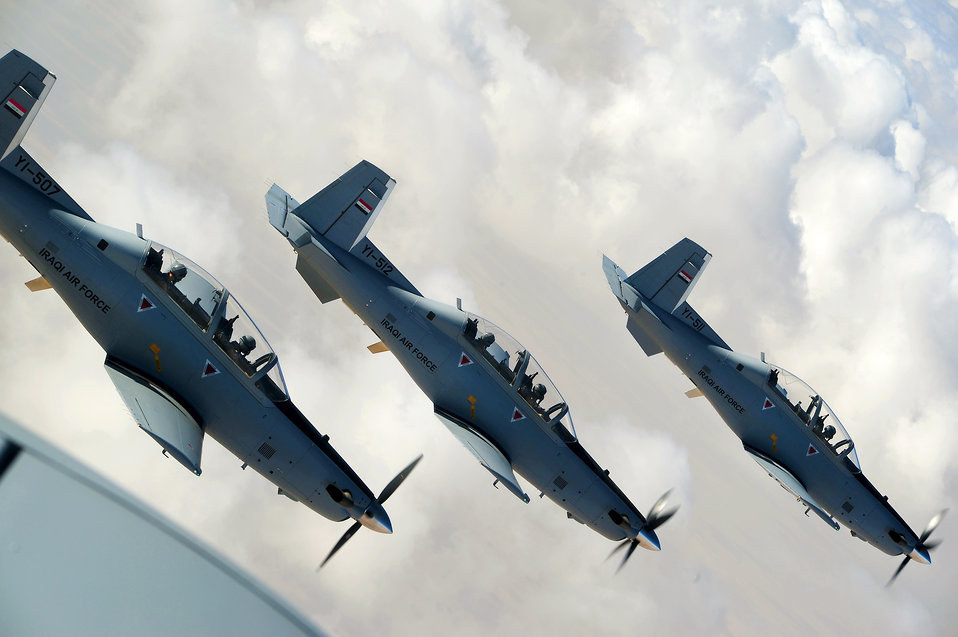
In the Iraqi sky

U.S. and Iraqi airmen fly in formation during one of the last training flights for the 52nd Expeditionary Flight Training Squadron and Squadron 203 Sept. 3, 2011, over Iraq. Advisers from the 52nd EFTS turned over flight training operations to the Iraqi air force Squadron 203 Sept. 5, 2011.